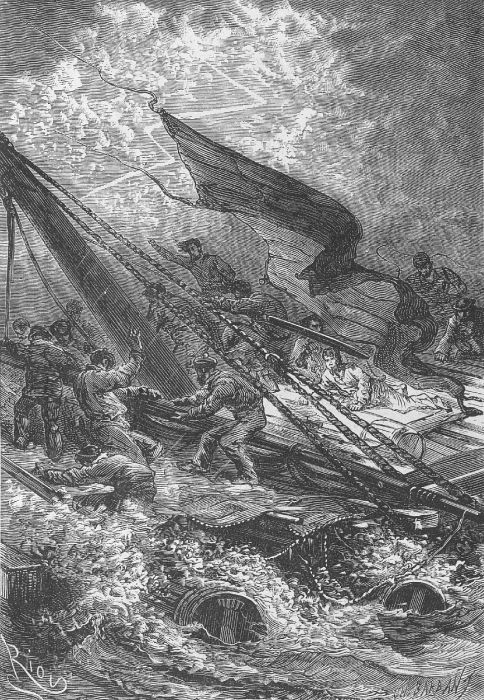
An ilustration from the novel 'The Survivors of the Chancellor: Diary of J. R. Kazallon, Passenger' by Jules Verne drawn by Édouard Riou. Polski: Ilustracja powieści Juliusza Verne'a 'Chancellor. Notatki podróżnego J. R. Kazallon' autorstwa Édouarda Riou. Français : 'Le Chancellor: Journal du passager J.-R. Kazallon', Édouard Riou. Orginal description from the book: Français : « La rafale ! La rafale ! »